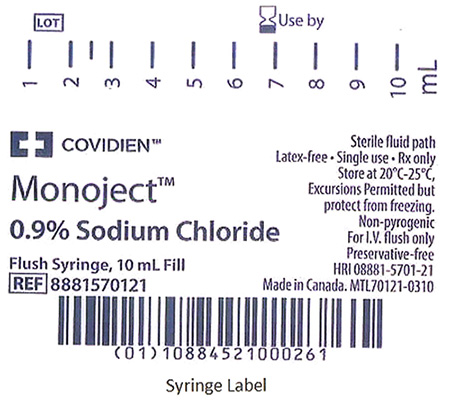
RECALLED – Monoject Prefill Flush Syringes

August 19, 2013 – Product Recall – Covidien Initiates a Voluntary Recall of Certain Lots of Monoject™ Prefill Flush Syringes Sold in the United States and Bermuda.